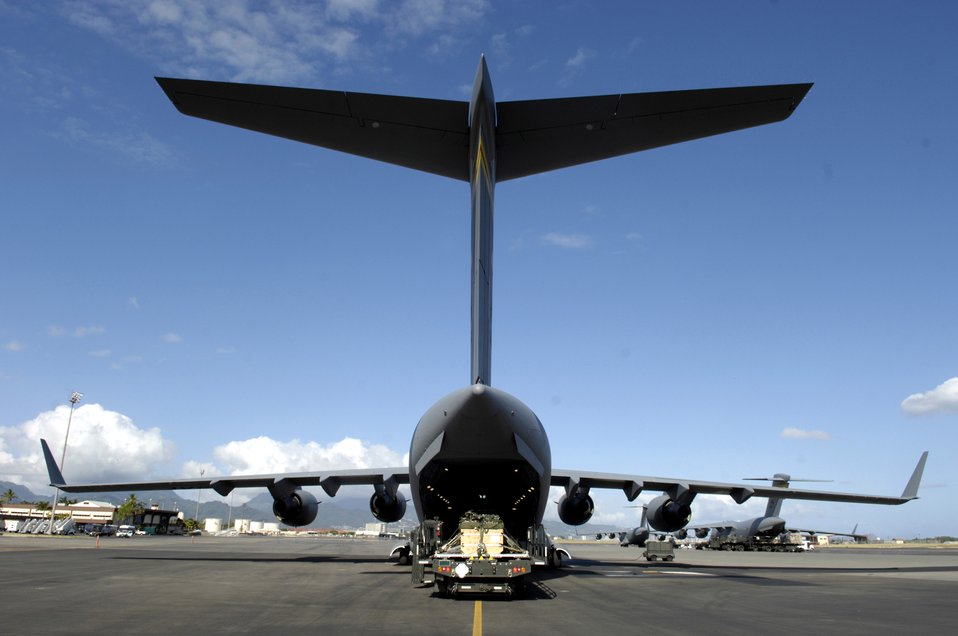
Load 'em up, drop 'em out

A 15th Logistics Readiness Squadron's K-Loader holds practice bundles ready to be loaded onto a C-17 Globemaster III June 11 at Hickam Air Force Base, Hawaii. The 535th Airlift Squadron is running the C-17's quarterly airdrop qualifications.